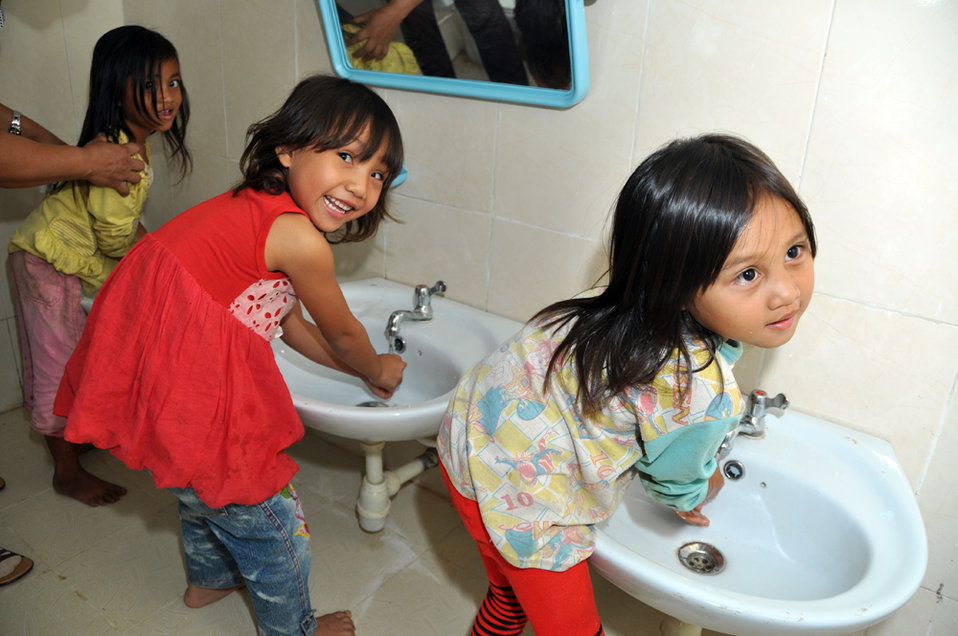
USAID contributes to refurbished pre-schools and teacher training in Vietnam